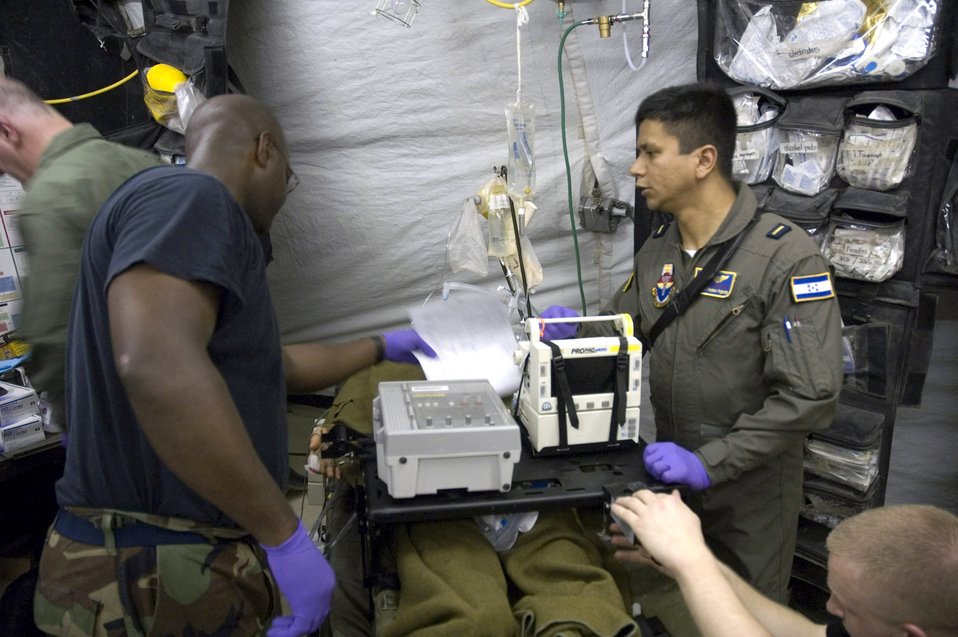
Flight surgeons get critical care hands-on in Hercules simulator

Dr. Pavel Perseo Fajardo (right), a flight surgeon from Honduras, and members of his assigned critical care air transport team prepare a